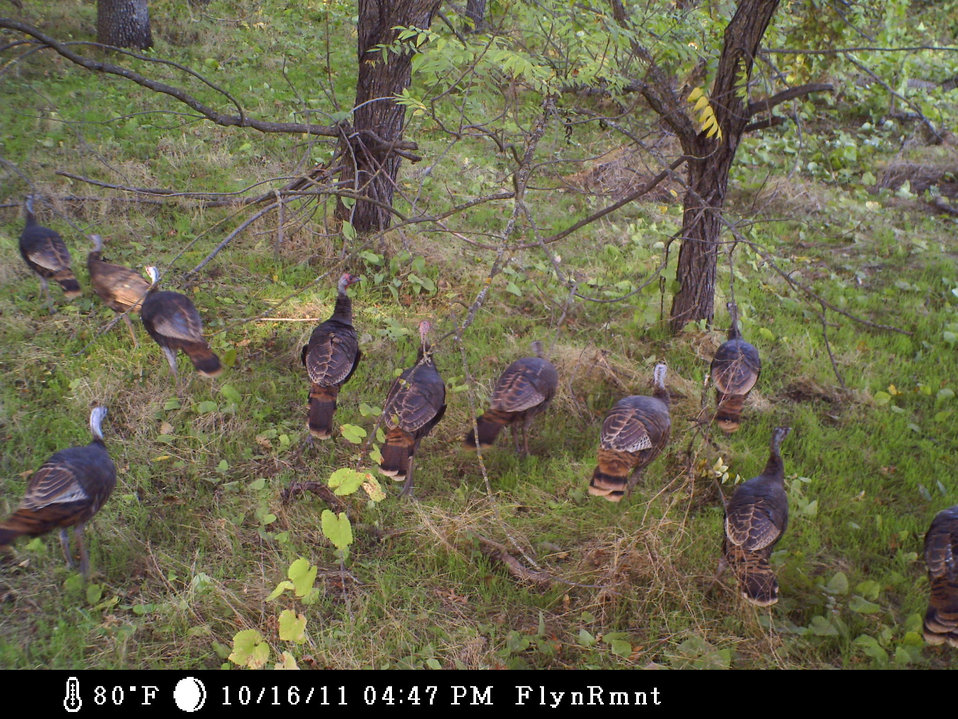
wild turkey flock

trail camera photo
Sacramento River National Wildlife Refuge, CA